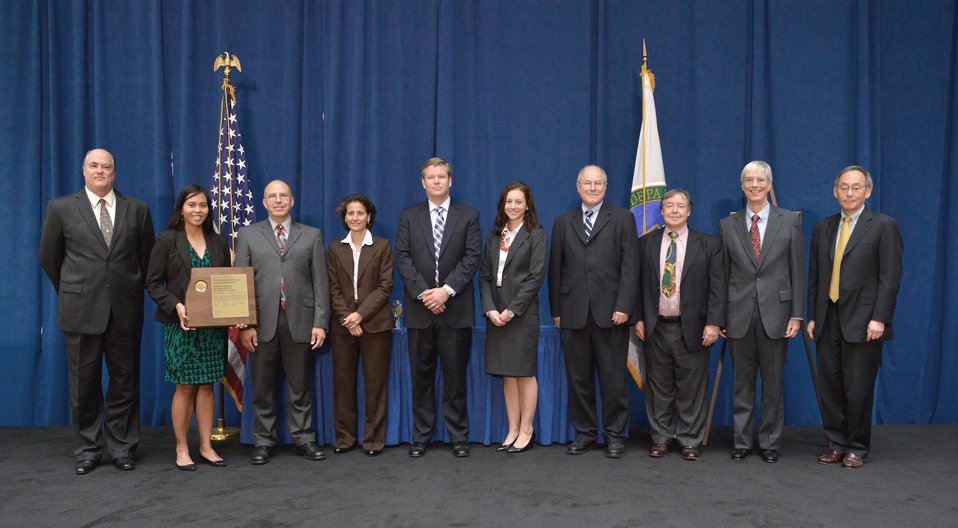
Depleted Uranium Kexafluoride Tails Re-enrichment Project

Awardees (not all pictured): Julie Ann D. Anderson, Claudia R. Andrews, Xavier Ascanio, Anita L. Capoferri, Shari T. Davenport, Gregory K. Delwiche, Nanette D. Founds, Christopher T. Hanson, Bert W. Gawthorp, Jr., Katherine C. Gehringer, Mark Joseph, James B. McRae, Charles R. Miskelley, William E. Murphie, James M. Owendoff, Randy A. Roach, William N. Szymanski, Candice S. Trummell. In recognition of service provided to the Depleted Uranium Hexaflouride (DUF6) Tails Re-Enrichment Project at the Paducah Gaseous Diffusion Plant, Paducah, Kentucky, during FY12. The team’s efforts to develop and gain approval for a plan to continue enrichment operations at USEC’s Paducah Gaseous Diffusion Plant led to utilization of a portion of the Department’s depleted uranium inventory in a way that brings together the public and private sector to advance America’s national security interests at a reduced cost to taxpayers. This is the only enrichment facility operating domestically that uses U.S. origin technology and meets the treaty obligations for the U.S. nuclear deterrent.